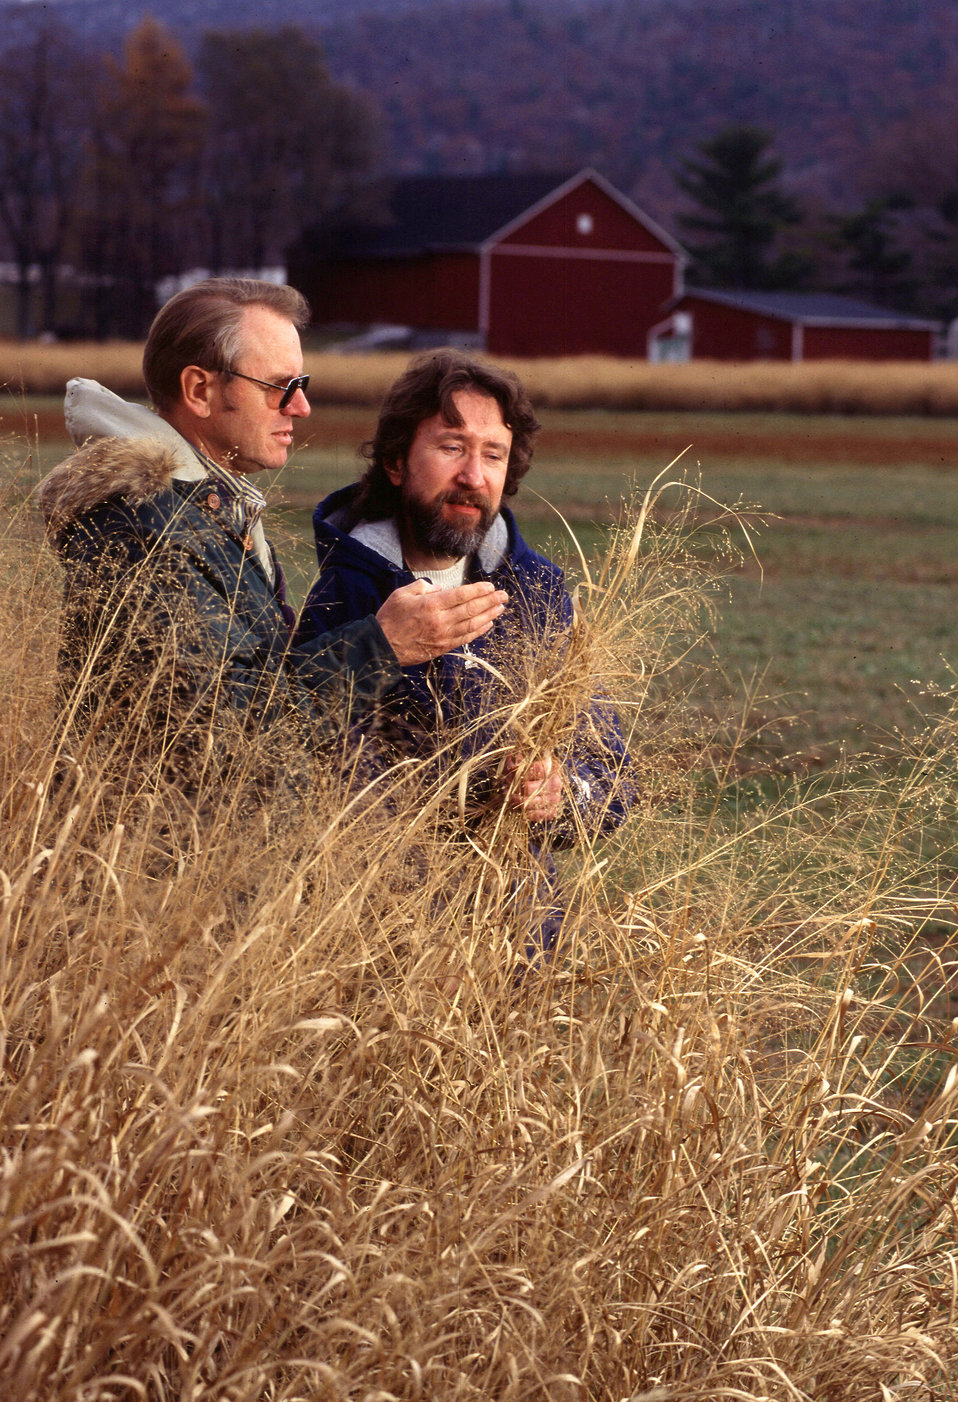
U.S. Department of Agriculture (USDA) Agricultural Research Service (ARS) soil scientists Harry Pionke and Ron Schnabel examine a switchgrass stand. Relatively small buffer areas not only can protect nearby streams from agricultural pollutants, but also provide habitat for ground-nesting birds and forage for beef cattle.